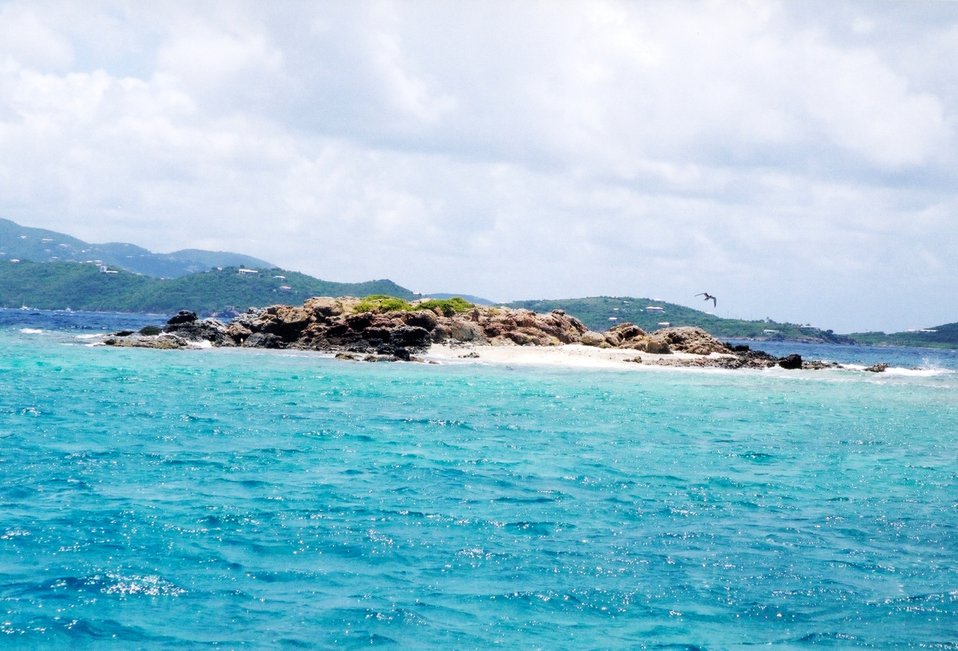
Stevens Cay, a small island in Pillsbury Sound